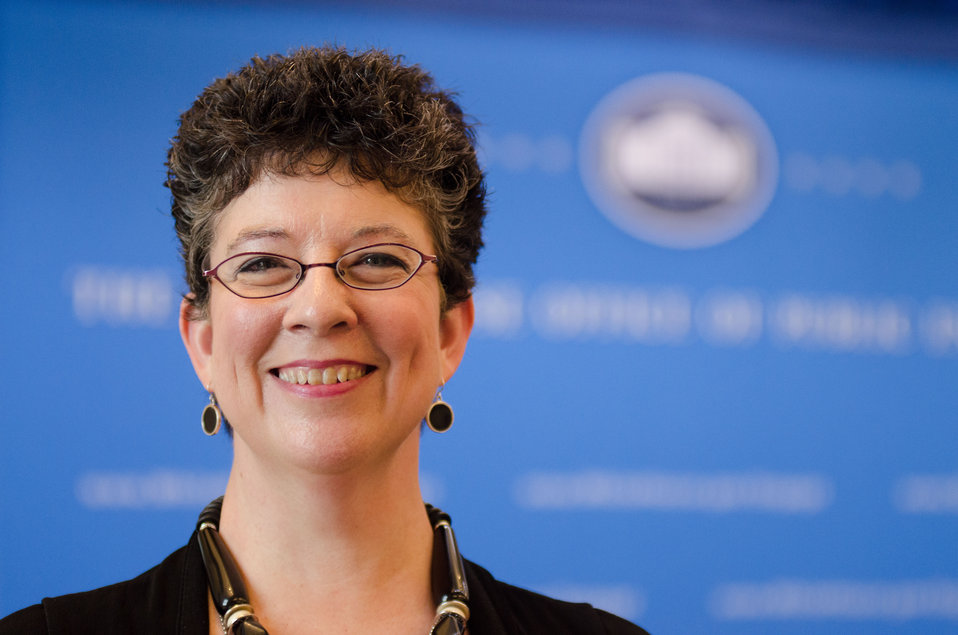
East Lake United Methodist Church Pastor Reverend Sally Allocca is one of eleven honorees recognized for their efforts to reduce hunger and increase food security in the U.S. and internationally at the White House Champions of Change Strengthening Food Security at Home and Abroad Event held at the White House on Thursday, September 6, 2012.